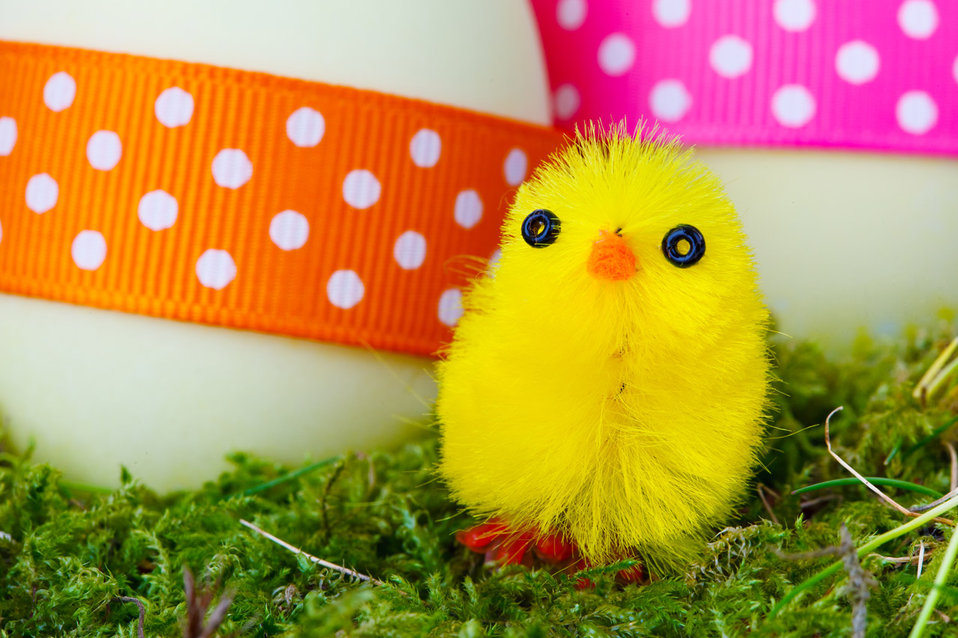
Yellow easter chick

Yellow chick with easter eggs in the background.